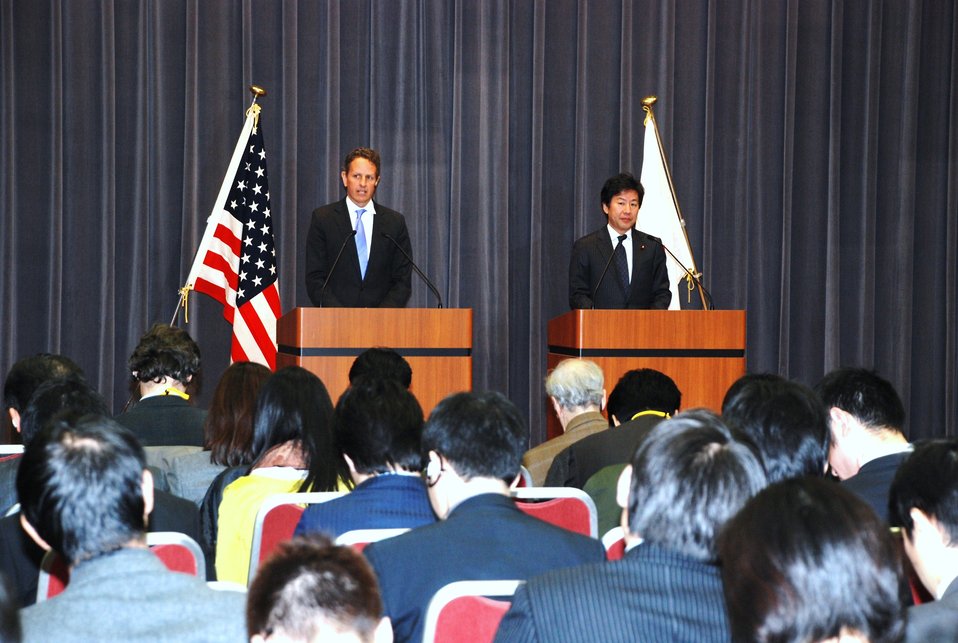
Secretary Geithner in Japan

On January 12, 2012, following a meeting with Japanese Finance Minister Jun Azumi at the Ministry of Finance in Tokyo, Treasury Secretary Tim Geithner participated in a joint press availability.